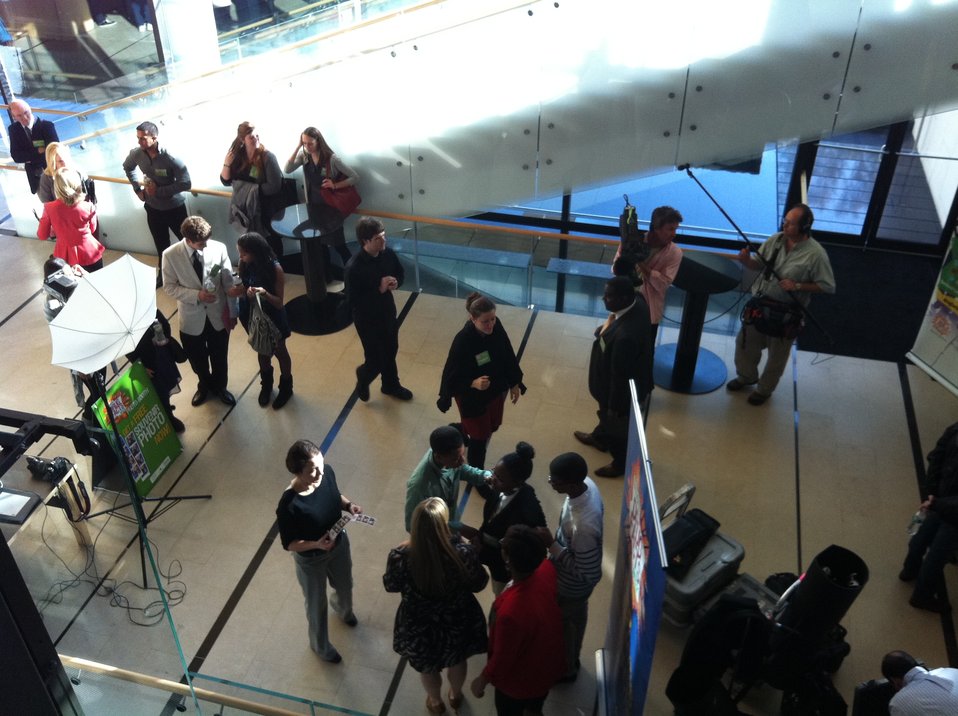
Mentor 4